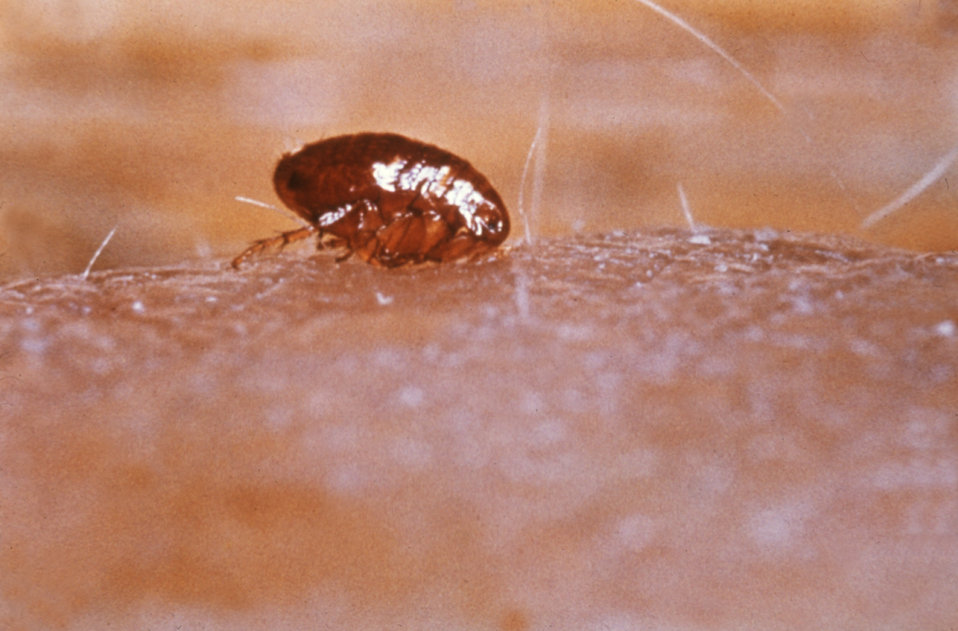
Xenopsylla cheopis, the oriental rat flea, is shown here extracting a blood meal from its host.